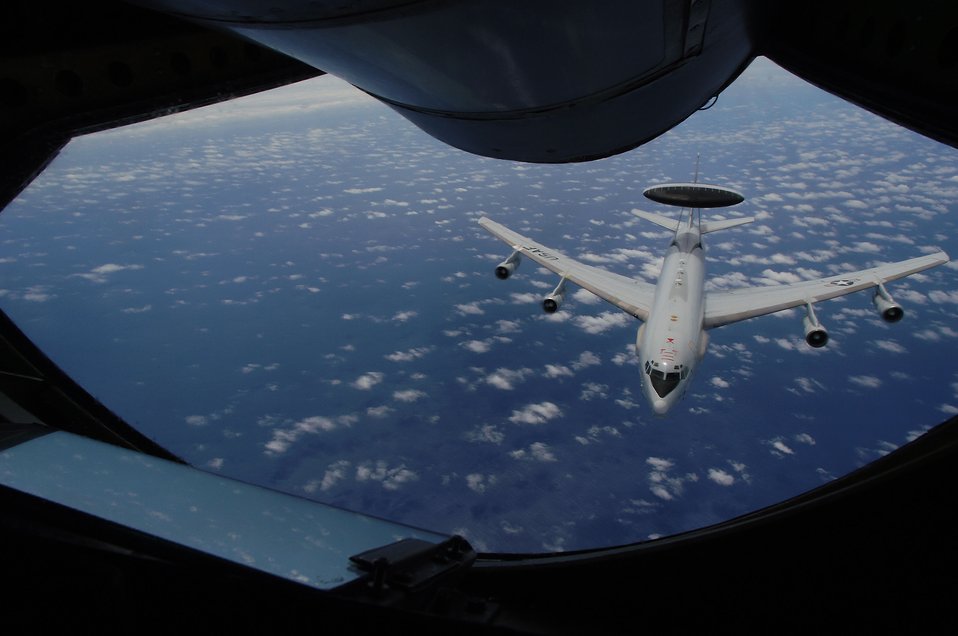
Patrolling

OVER THE PACIFIC OCEAN -- An E-3 Sentry airborne warning and control systems aircraft refuels off the western coast of Ecuador before patrolling the sky over South America.